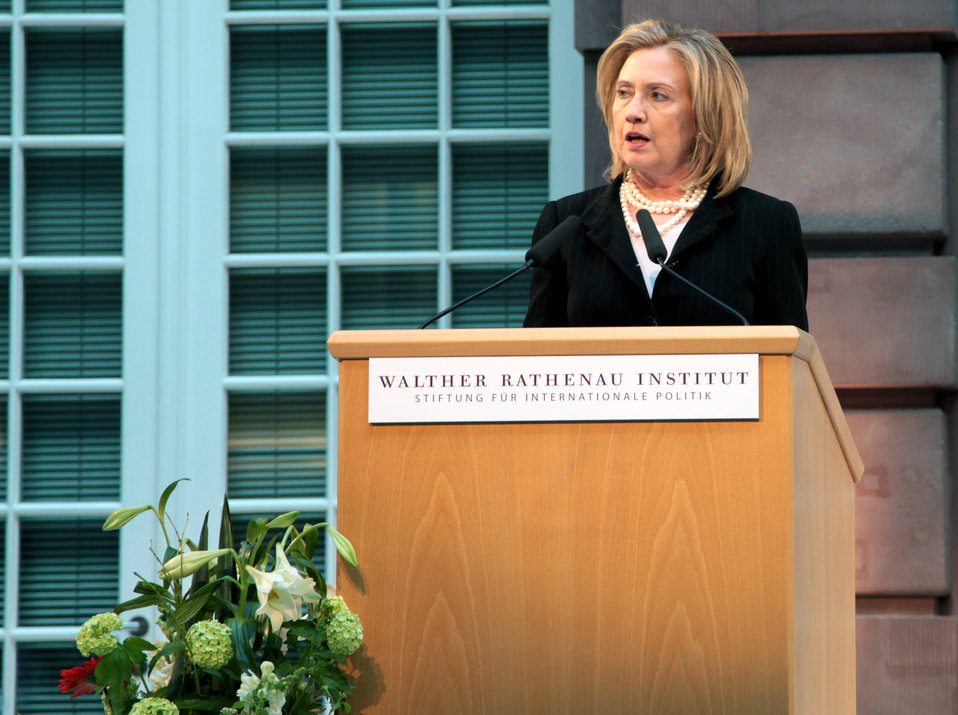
Secretary Clinton Delivers Remarks

U.S. Secretary of State Hillary Rodham Clinton delivers remarks upon receiving the Walther Rathenau Award, in Berlin, Germany, on April 15, 2011.